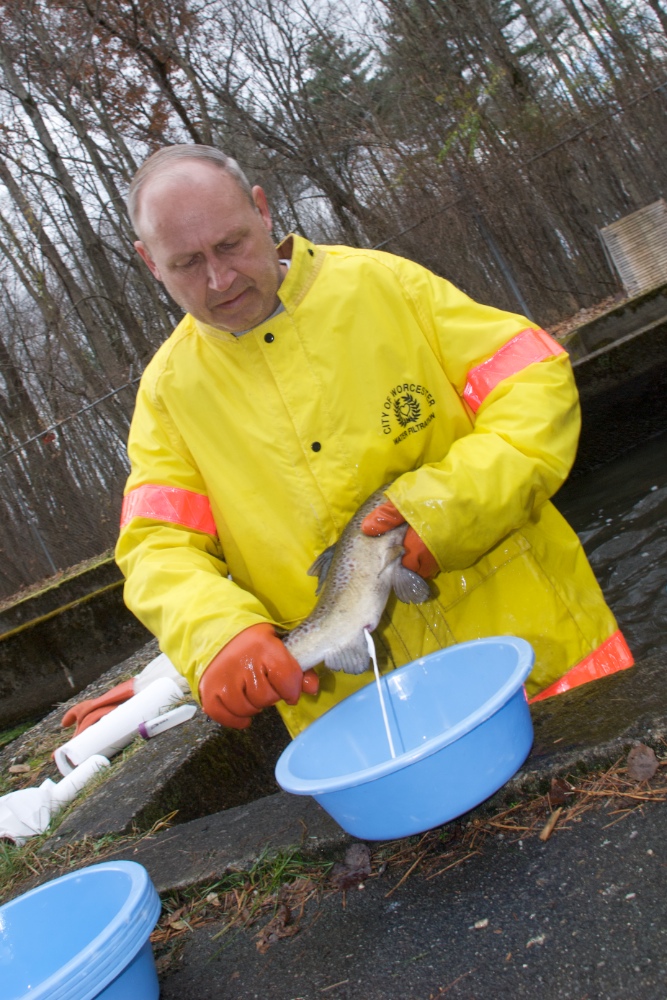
Richard Cronin National Salmon Station

Volunteers harvesting salmon eggs at the Richard Cronin National Salmon Station in Sunderland, MA.